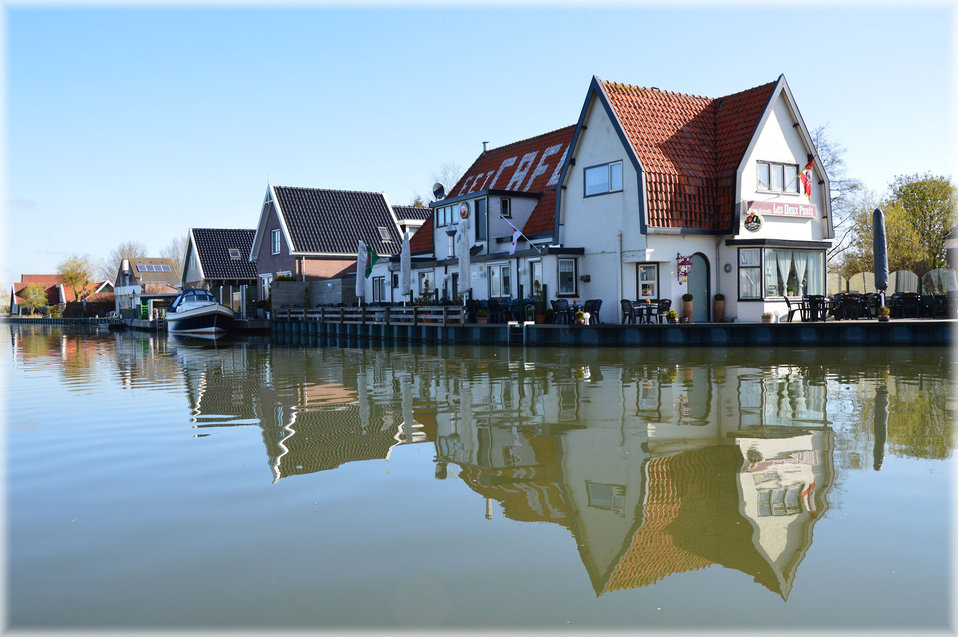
Country life

Small town in waterland, holland.